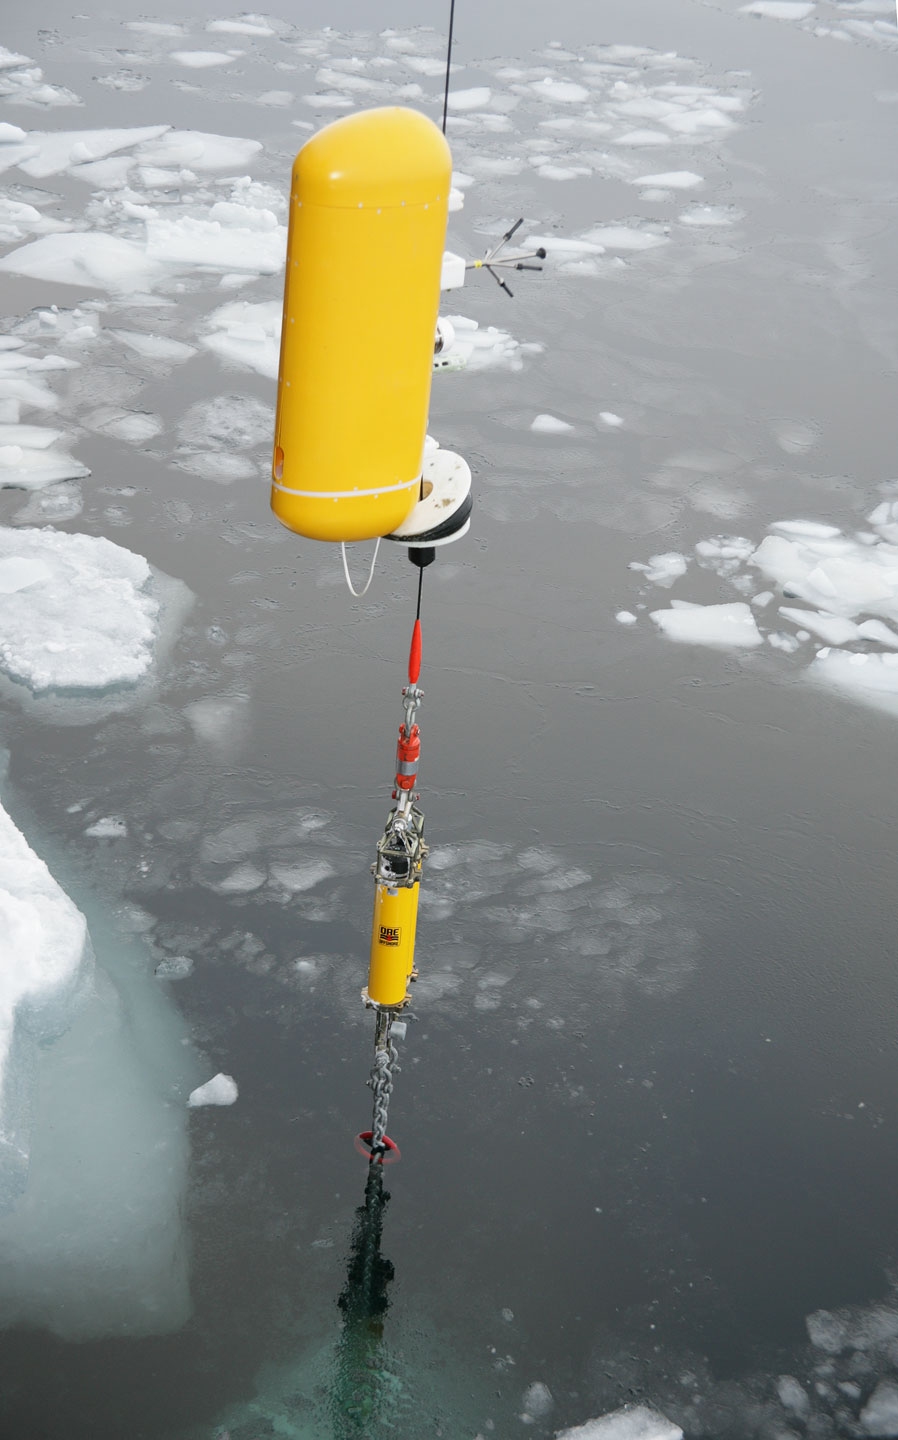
The marine profiling instruments are set up to motor up and down the cable to prescribed depths. Special bumpers are positioned at both ends of the profile range.